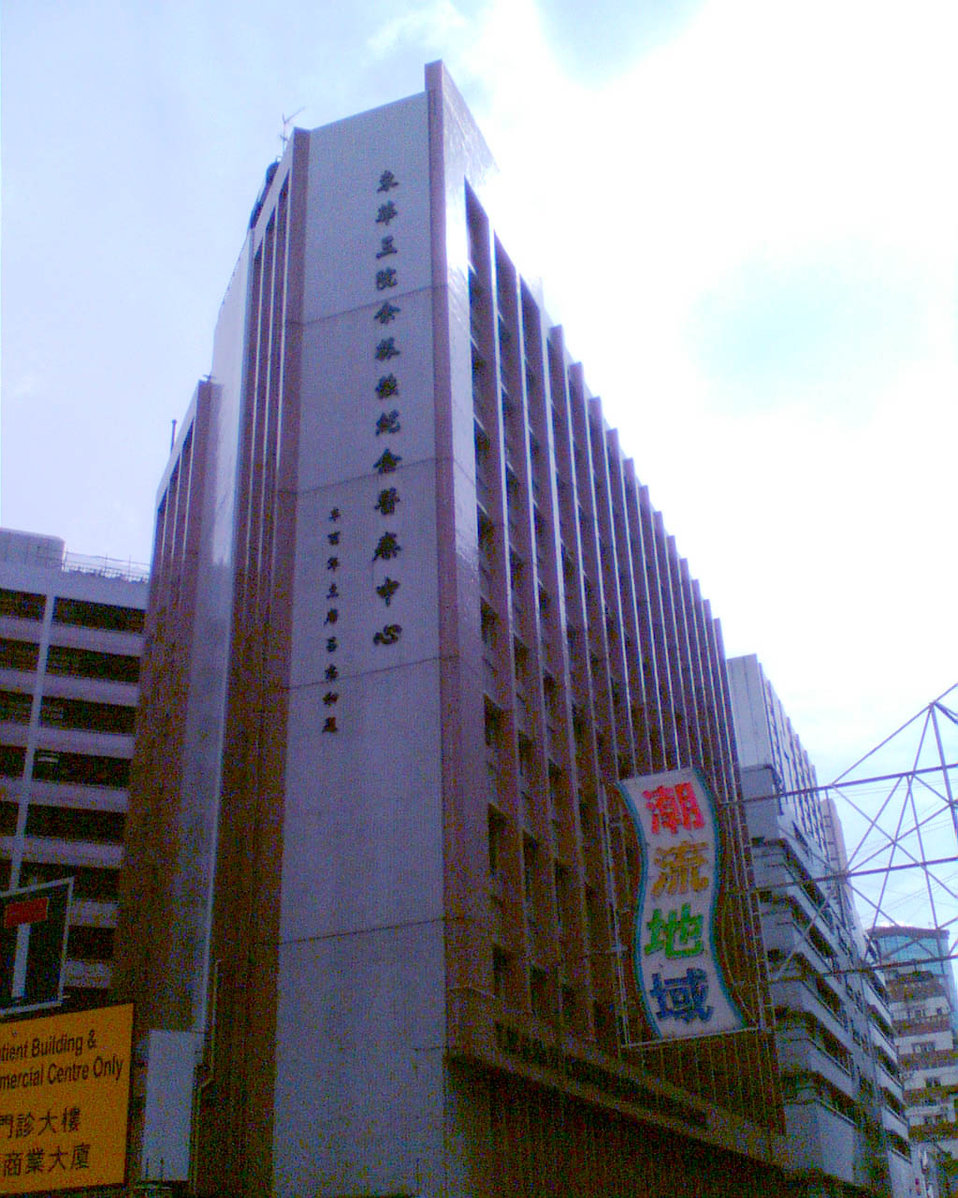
東華三院余振強紀念醫療中心